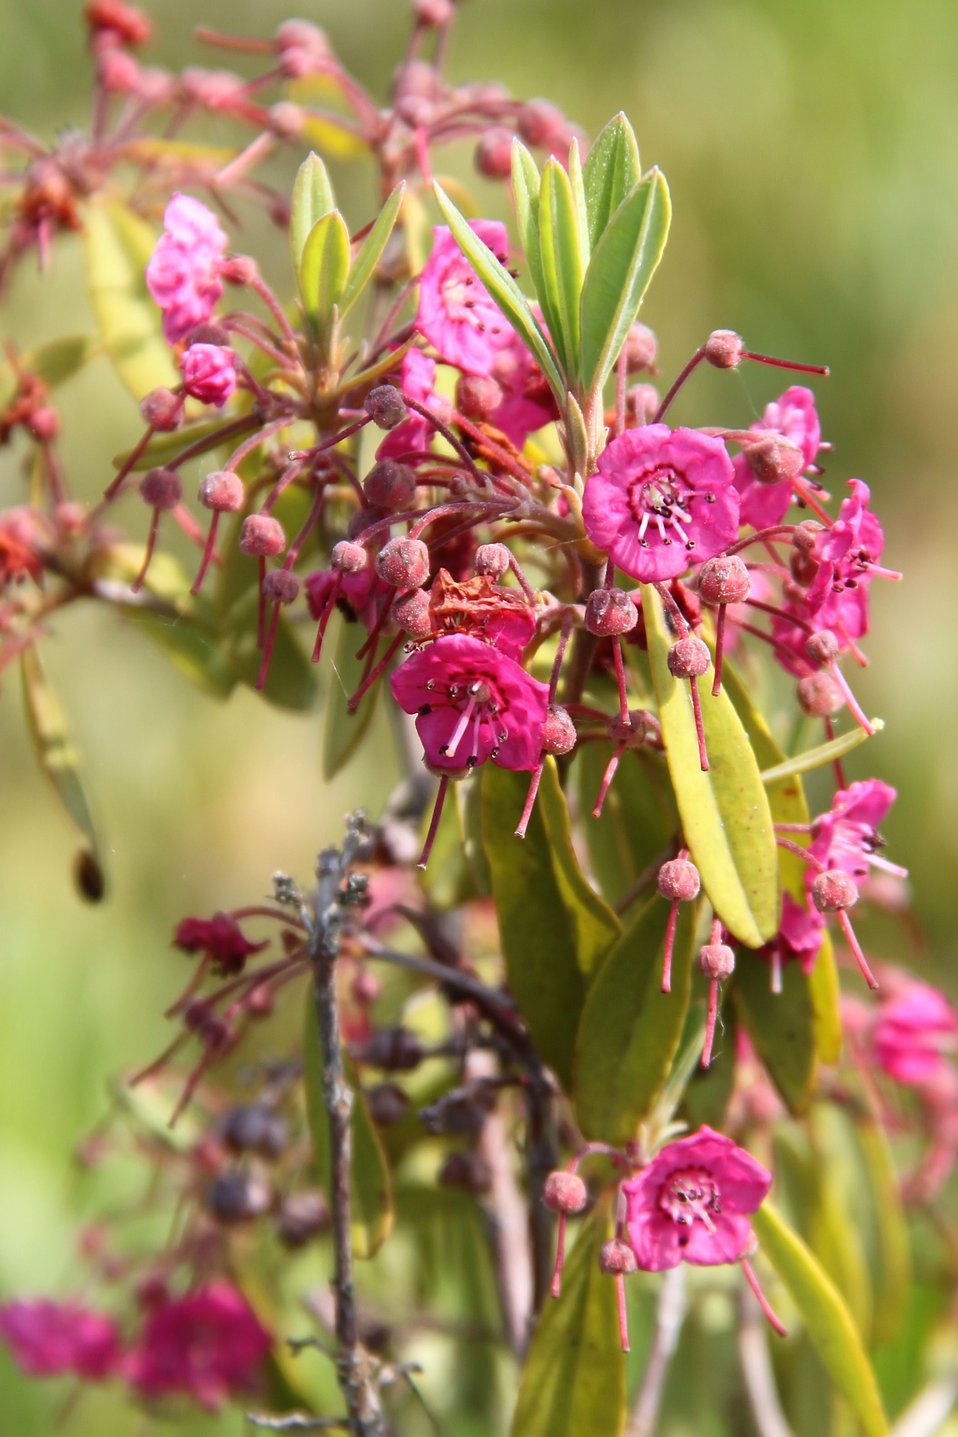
Sheep Laurel

Photographed at Missisquoi National Wildlife Refuge.